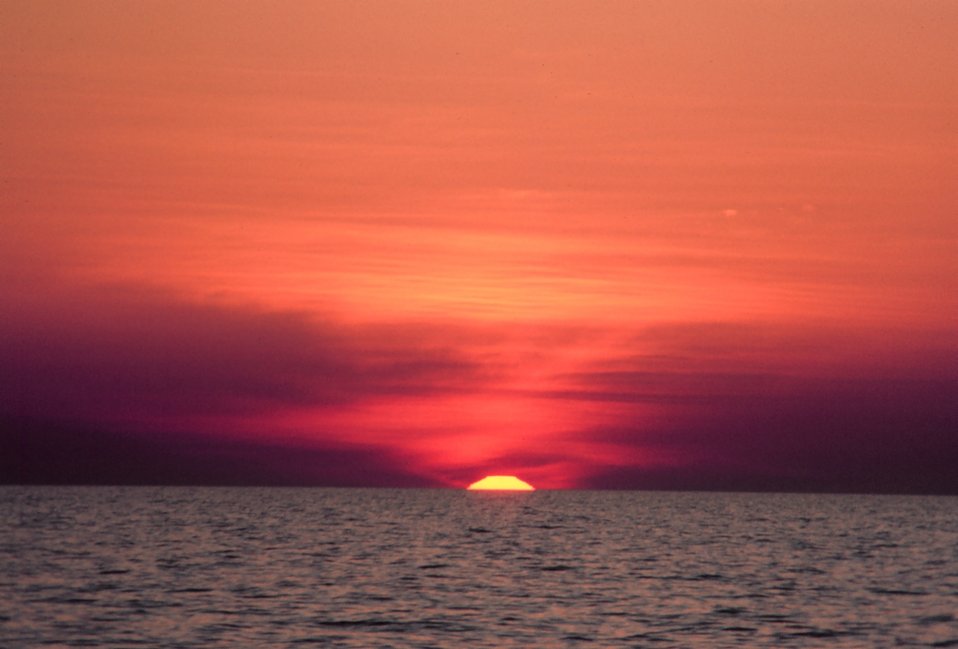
The upper limb of the sun in sight for a few more minutes over the ocean as the Earth spins rapidly away to the east.